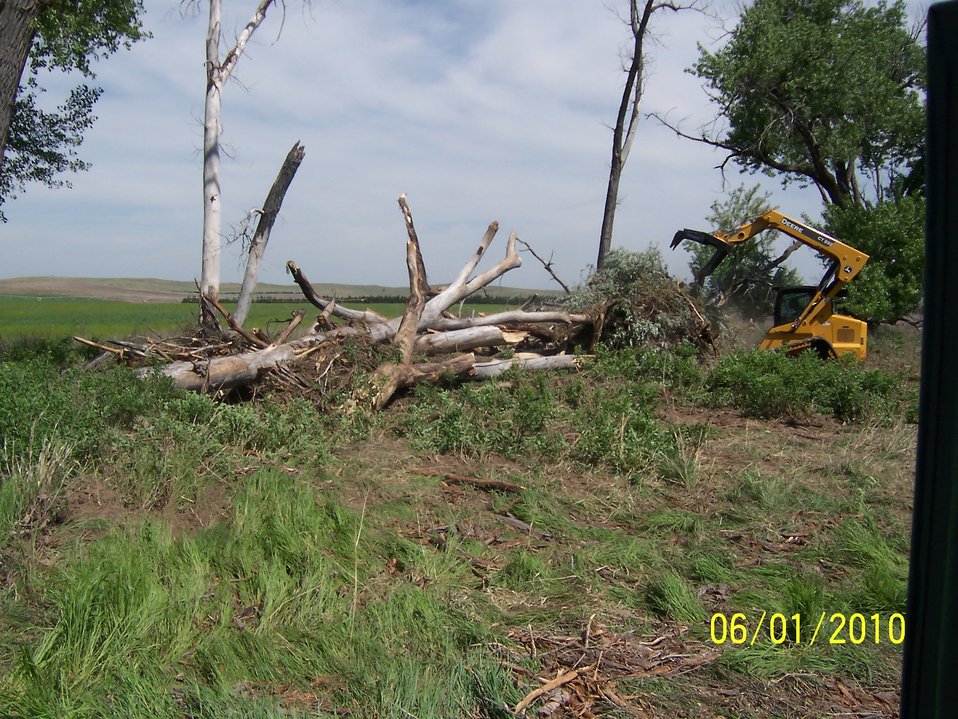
Invasive Tamarisk Removal

A contractor removes invasive tamarisk from a riparian area along the Republican River in Colo.

The project was funded by the U.S. Fish and Wildlife Service’s Partners for Fish and Wildlife program, whose habitat restoration projects are extraordinary engines for the U.S. economy. Restoration Returns: The Contribution of Partners for Fish and Wildlife Program and Coastal Program Projects to Local U.S. Economies finds that, in working directly with partners to implement vital on-the-ground habitat restoration, Service programs created more than 3,900 jobs in Fiscal Year 2011, generating a total economic stimulus of $327.6 million.

The “restoration economy” is a subset of green jobs that includes such industries as heavy equipment providers and operators, plant nurseries, landscape architects, and construction companies, among other firms.

Download the entire report at: www.fws.gov/home/restoration returns.html.